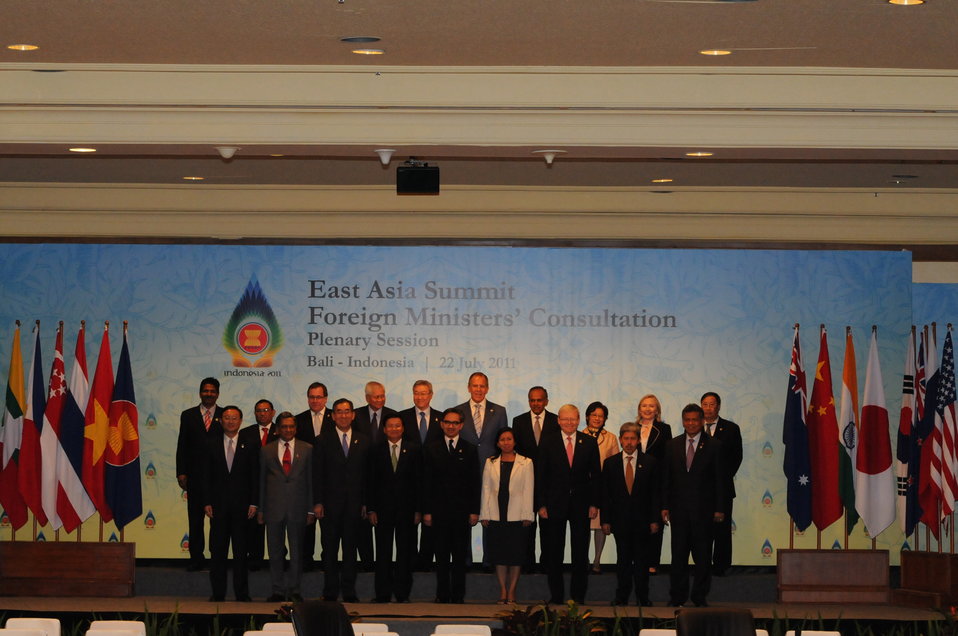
Secretary Clinton Poses for a Family Photo at the East Asia Summit Foreign Ministers’ Consultation

U.S. Secretary of State Hillary Rodham Clinton poses for a family photo at the East Asia Summit Foreign Ministers’ Consultation in Bali, Indonesia, on July 22, 2011. Standing in the front row from left to right are: Chinese Foreign Minister Yang Jiechi, Indian Foreign Minister S.M. Krishna, Japanese Foreign Minister Takeaki Matsumoto, Lao Foreign Minister Thongloun SIsoulith, Indonesian Foreign Minister Marty Natalegawa, Cambodian Secretary of State Seoung Rathchavy, Australian Foreign Minister Kevin Rudd, Bruneian Foreign Minister Mohammad Bolkiah, ASEAN Secretary General Surin Pitsuwan. Standing in the rear row from left to right are: Malaysian Deputy Foreign Minister Kohilan Pillay, Burmese Foreign Minister Wunna Maung Lwin, New Zealand Foreign Minister Muray McCully, Philippines Foreign Minister Albert Del Rosario, South Korean Foreign Minister Kim Sung-hwan, Russian Foreign Minister Sergey Lavrov, Singaporean Foreign Minister K. Shanmugam, Thai Deputy Permanent Secretary for Foreign Affairs Chitriya Pinthong, U.S. Secretary of State Hillary Rodham Clinton, and Vietnamese Foreign Minister Pham Gia Khiem.